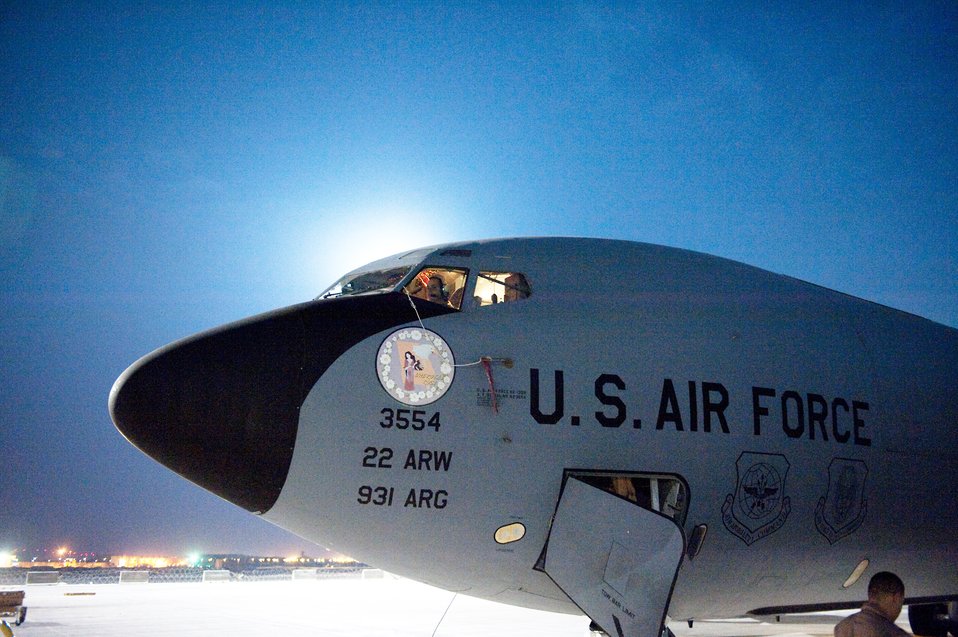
KC-135 crews prepare for mission

A KC-135 Stratotanker waits on an airfield in Southwest Asia while crew members perfom preflight checks, Dec. 2, 2009. The aircraft is assigned to the Air Force Reserve Command's 22nd Air Refueling Wing at McConnell Air Force Base, Kan.